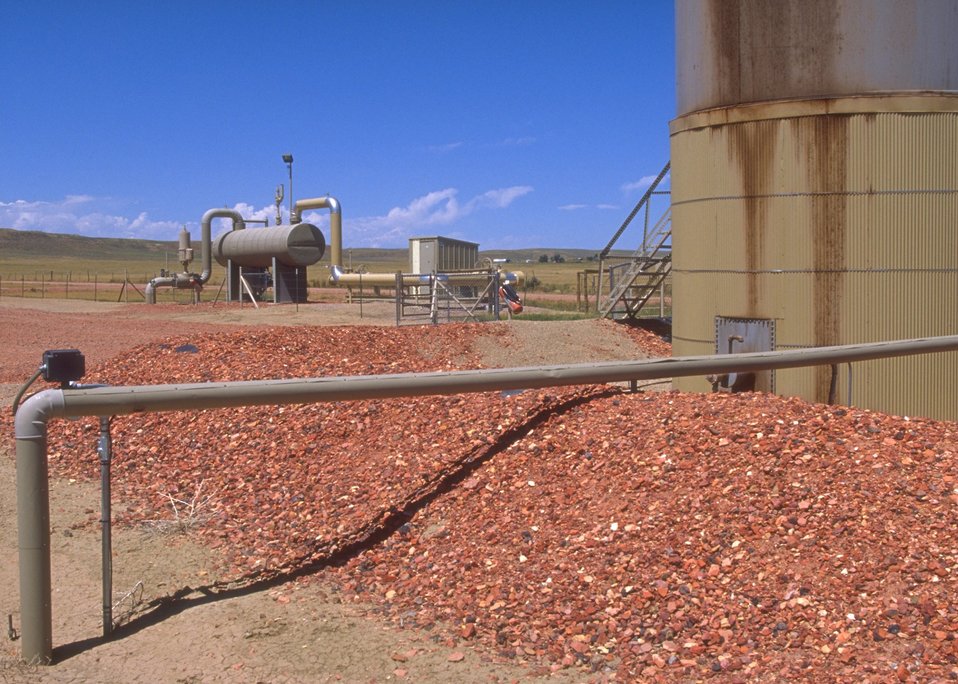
Facilities used in the production of coal bed methane, Buffalo Field Office.